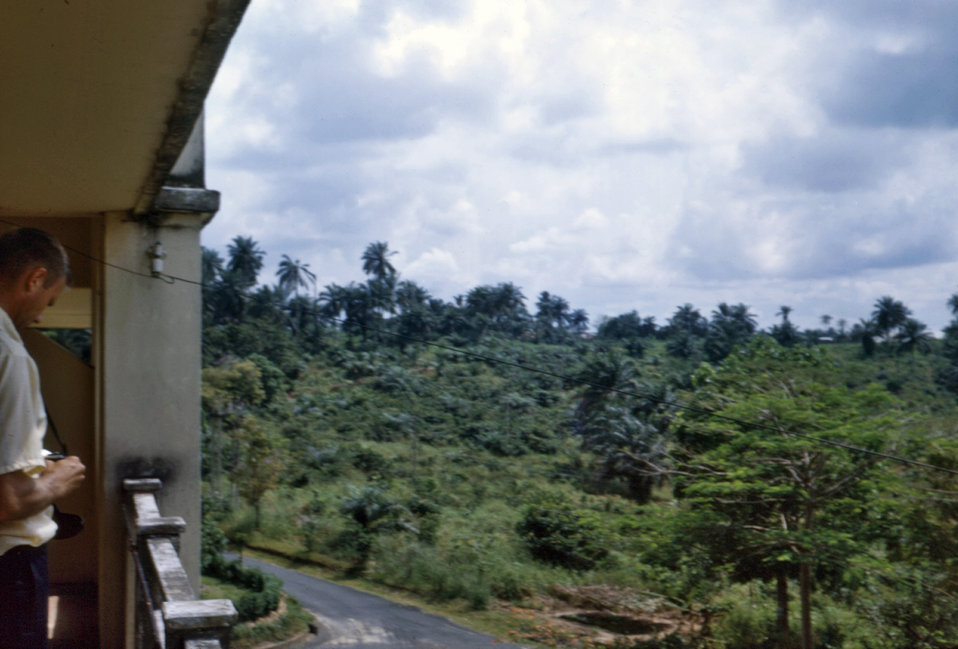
This 1968 photograph shows the landscape of southeastern Nigeria during the Biafran civil war.